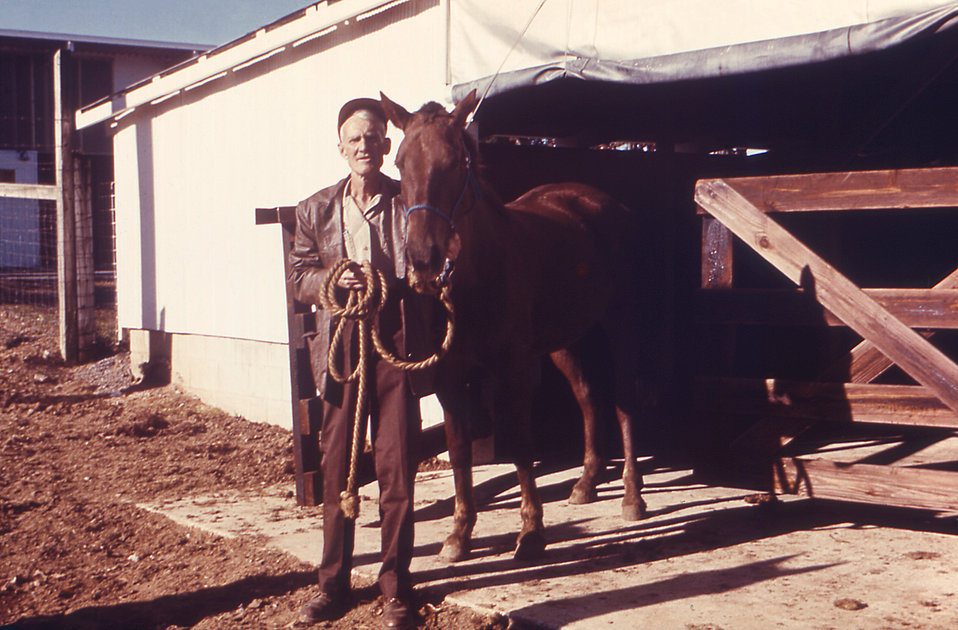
In this 1970 image, Mr. Healan was pictured standing in front of what were the Centers for Disease Control's (CDC) Lawrenceville, Georgia facilities holding the reins of one of the CDC's horses.